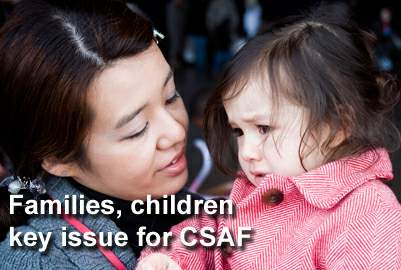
Families, children key issue for chief of staff

Support for families -- especially in the area of child education -- is a pressing issue for the military according to Air Force Chief of Staff Gen. Norton Schwartz and two other service chiefs and other service representatives here in July for a panel discussion focusing on issues related to the unique situations faced by military children and their education.